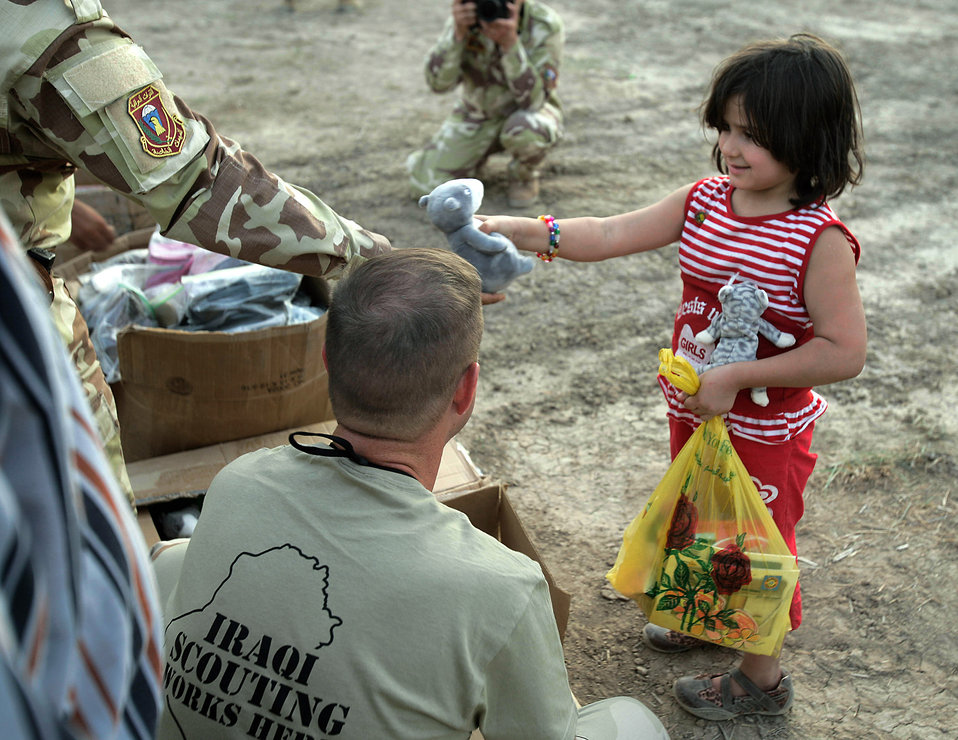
Iraqi soldiers learn value of 'strength through truth' in PA course

Iraqi and coalition forces visit children at a nearby village in Baghdad, Iraq, to hand out toys, play soccer and read to the boys and girls. The students from the Iraqi Special Operations Forces each wrote a feature story and took photos of the event as part of their public affairs photojournalism course.